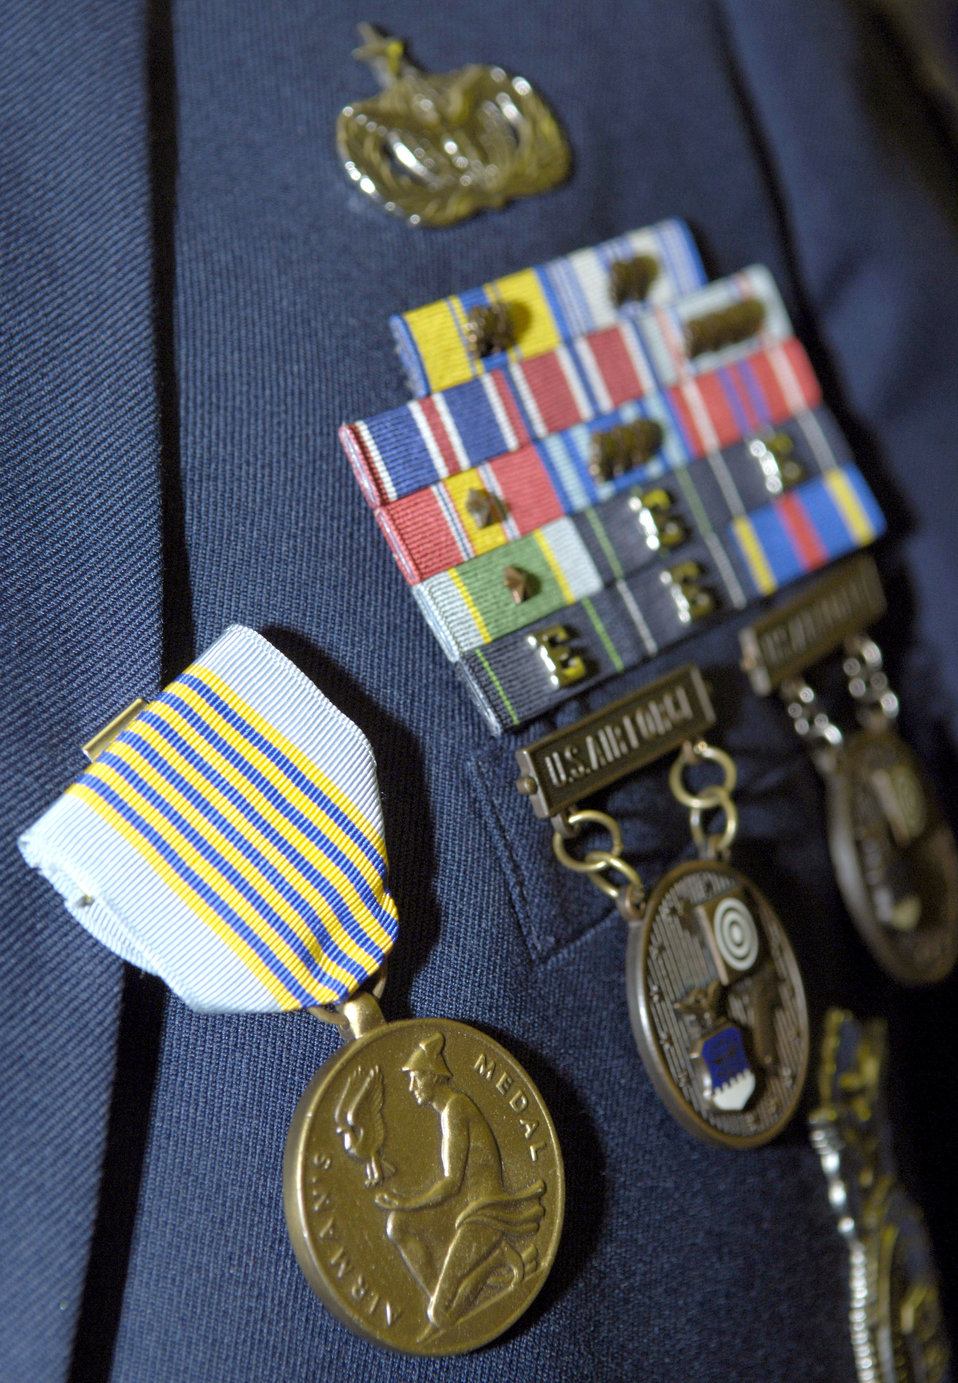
Airman receives medal for water rescue

WASHINGTON -- Tech. Sgt. Michael Downey II was presented an Airman's Medal from Air Force Chief of Staff Gen. John P. Jumper during a ceremony here Aug. 31. Sergeant Downey was awarded the medal for displaying exemplary courage and heroism on Oct. 17, 2003, when he swam to a vehicle that had just crashed into a canal, freed the 89-year-old driver who was trapped inside the vehicle and swam her to safety.